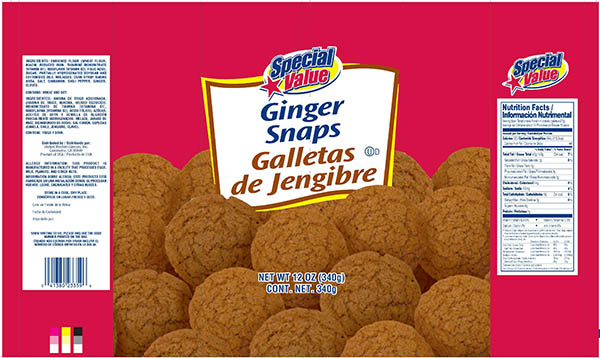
RECALLED – Ginger Snaps Cookies

January 31, 2014 – Product Recall – Unified Grocers, Inc. Issues Allergy Alert on Undeclared Eggs in “Special Value Ginger Snap Cookies”.